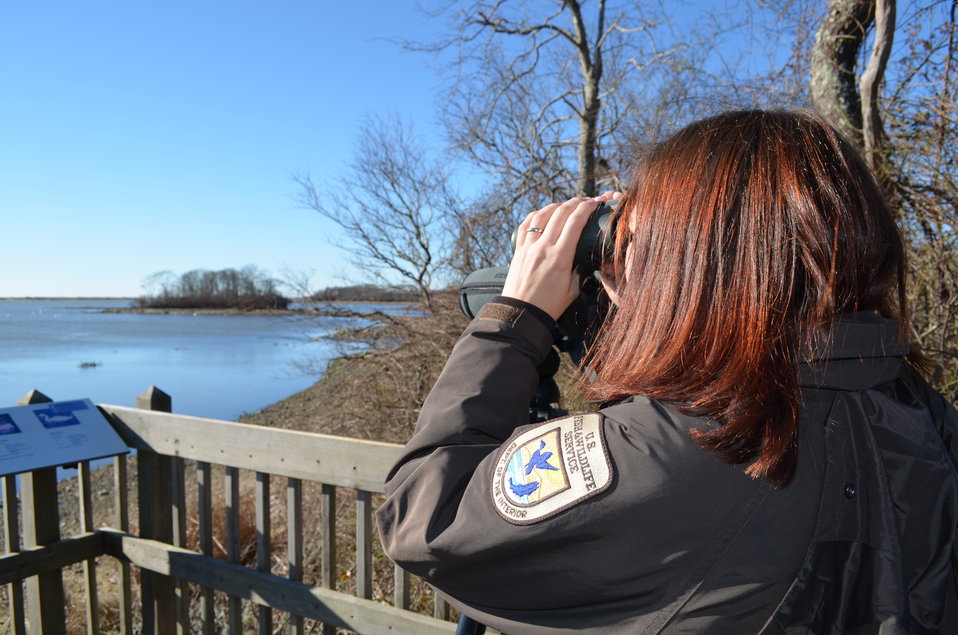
Binocular viewing (RI)

Wildlife biologist Rhonda Smith uses binoculars to assess bird species at Trustom Pond National Wildlife Refuge following Hurricane Sandy.